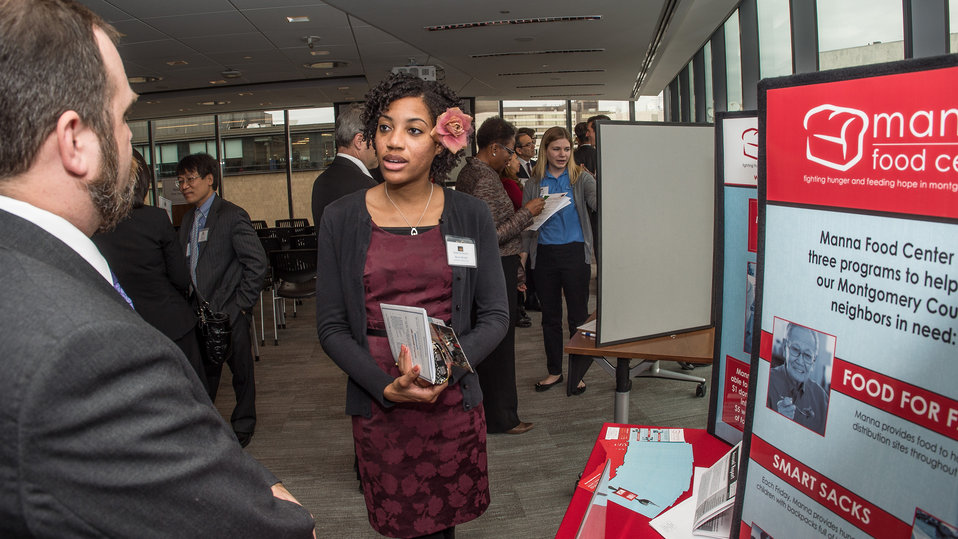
An embassy representative (right) asks Manna Food Center Director of Development Mark Foraker a question while at the Share the Season event organized by the U.S. Department of State Office of the Chief of Protocol Diplomatic Partnership Division at the Business Roundtable (BRT) in Washington, D.C. on Thursday, Nov. 21, 2013. BRT is a non-profit association of chief executive officers of leading U.S. companies that encourages embassies and diplomats to be active in local community service projects.